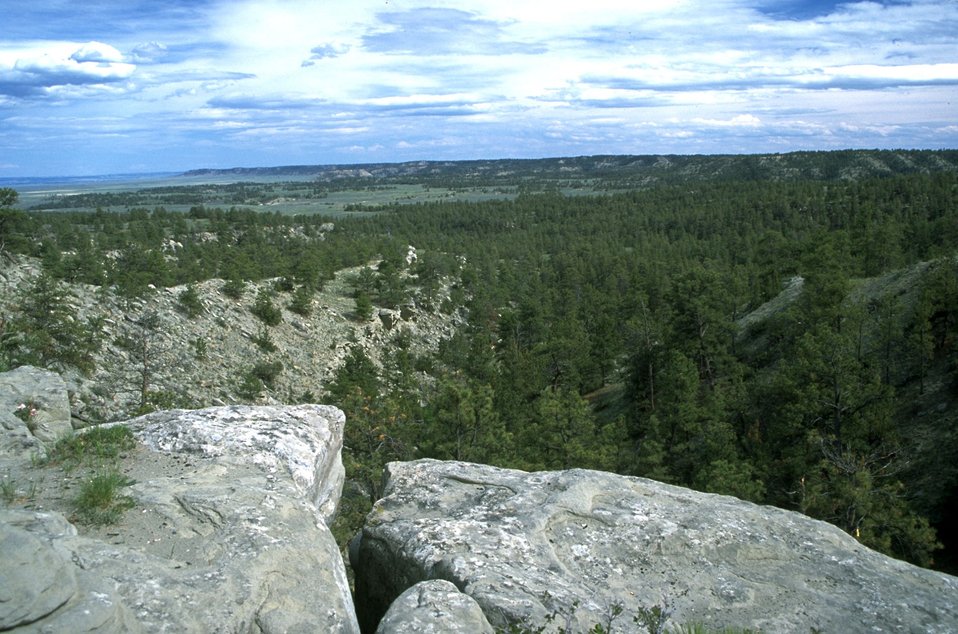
Looking southeast from the rimrocks in the Acton Recreation Area